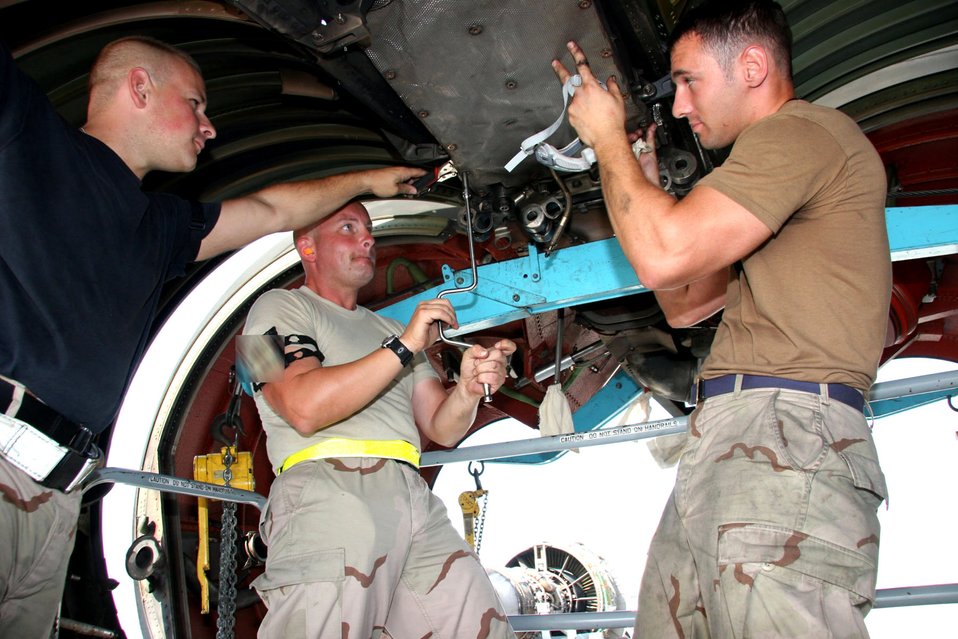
Desert KC-10 Engine Change

After removing a damaged engine on a KC-10 Extender, Tech. Sgt. Art Hall (from left), Tech. Sgt. Rick Baugnet and Staff Sgt. Jamie Sherwood prepare to install a new engine Nov. 23. The three sergeants are maintainers with the 380th Expeditionary Aircraft Maintenance Squadron at an air base in Southwest Asia.